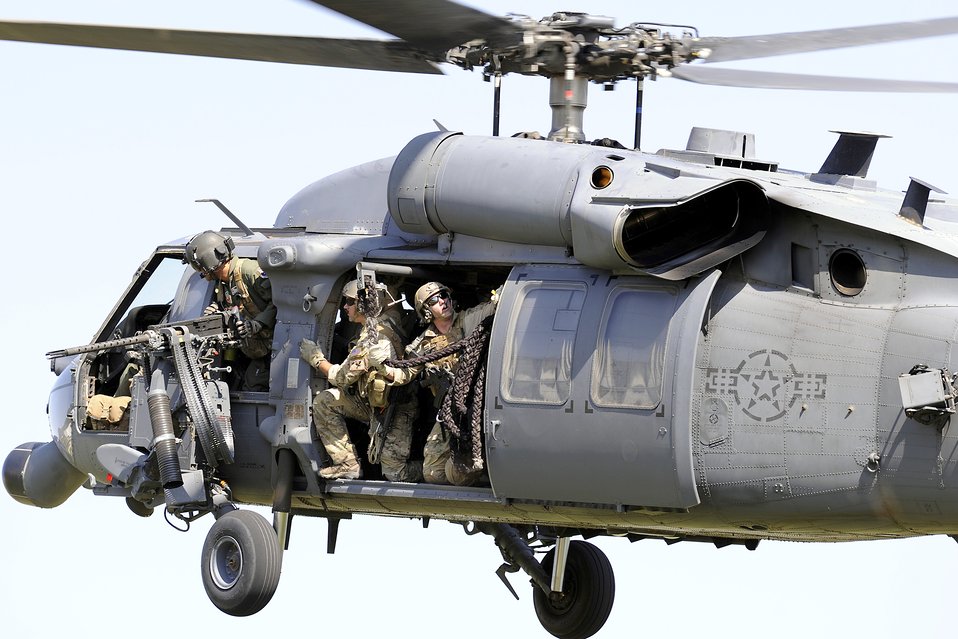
Search and rescue demonstration

An HH-60 Pave Hawk helicopter crew participates in a combat search and rescue demonstration Oct. 1, 2010, at the U.S. Air Force Academy in Colorado Springs, Colo. The HH-60 and its crew are assigned to Davis Monthan Air Force Base, Ariz.